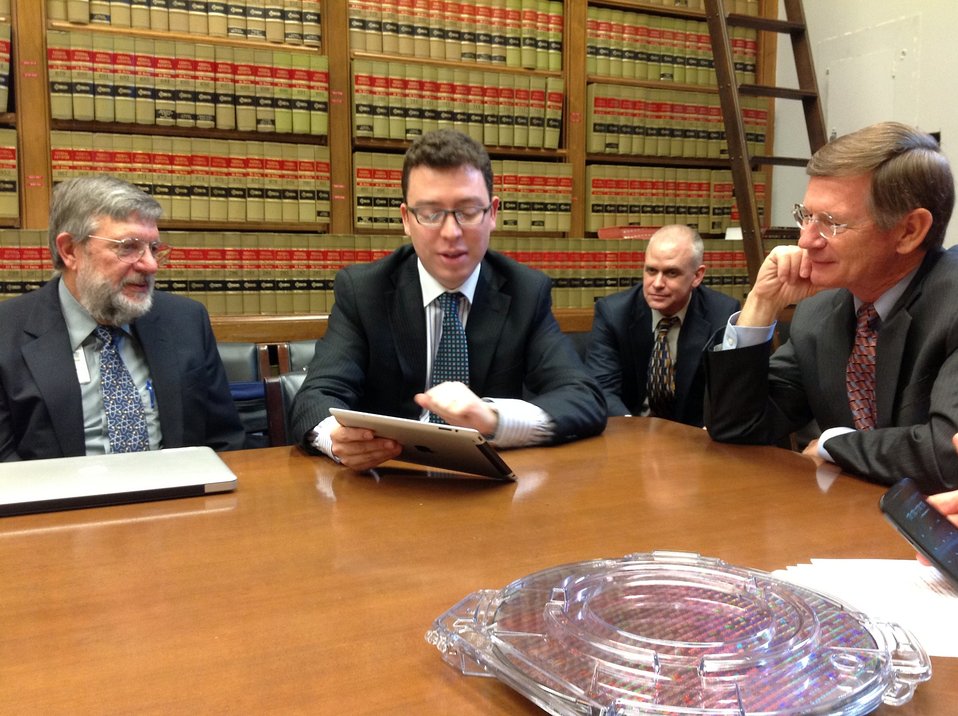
Dr. Bill Phillips and Dr. Luis Van Ahn

NIST Nobel Laureate Dr. Bill Phillips (left) and Carnegie Mellon Computer Scientist Dr. Luis Van Ahn (center) brief Representative Lamar Smith of Texas (right) and his staff on critical basic research efforts that made today’s iPad a reality.